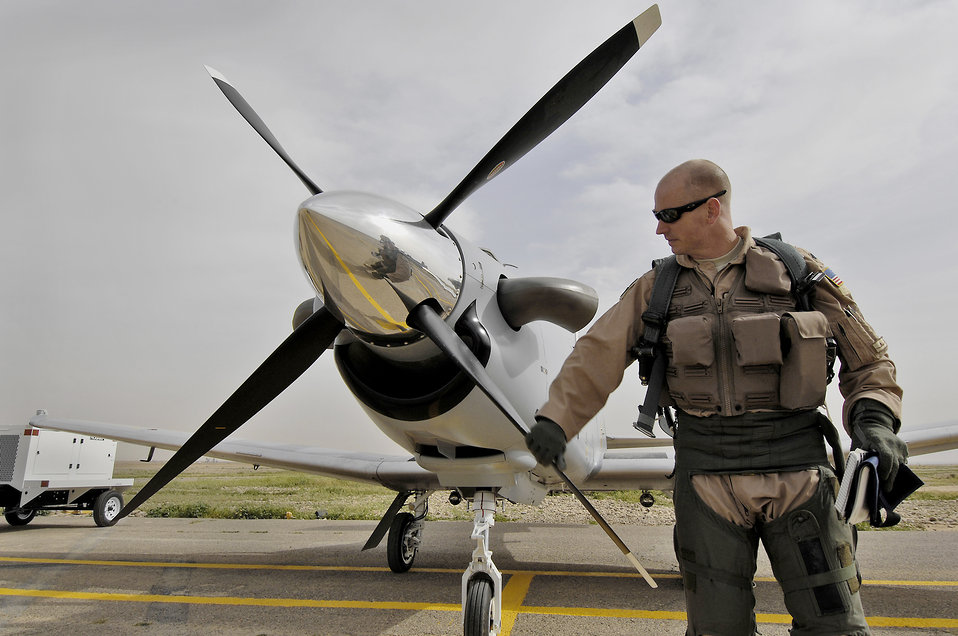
Feels right

Lt. Col. Jeff Myer conducts a preflight inspection of an Iraqi air force T-6A before a training readiness mission at Al Sahra Air Base near Tikrit, Iraq, March 15, 2010. Colonel Myer is an operations officer and instructor pilot with the 52nd Expeditionary Flight Training Squadron.